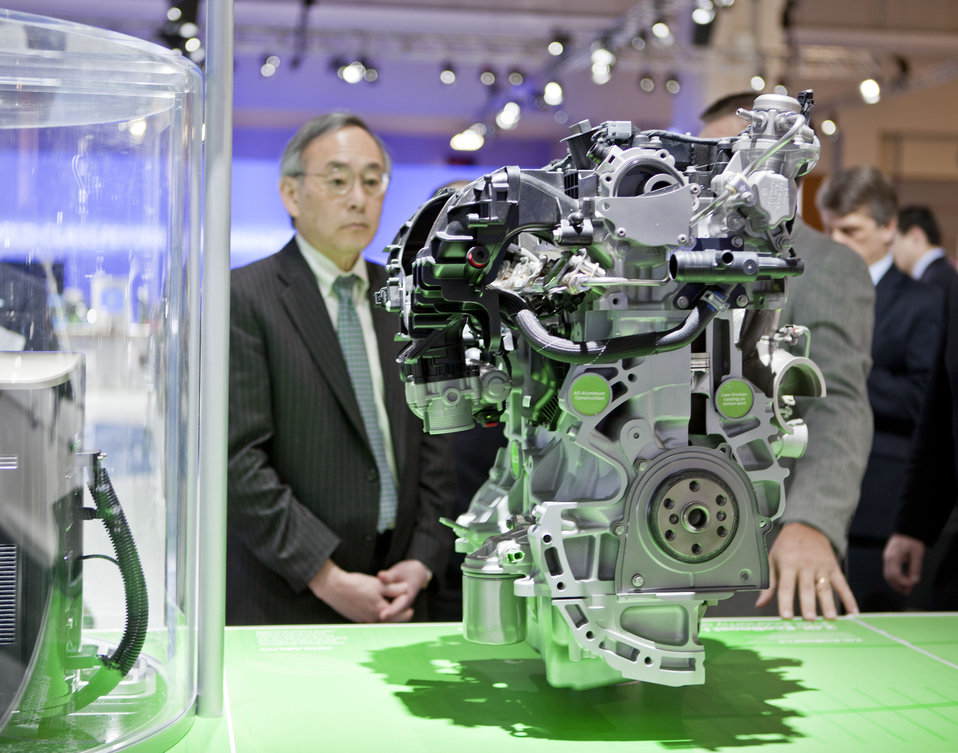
Energy Secretary Steven Chu discusses Ecoboost technology with the Ford representative.